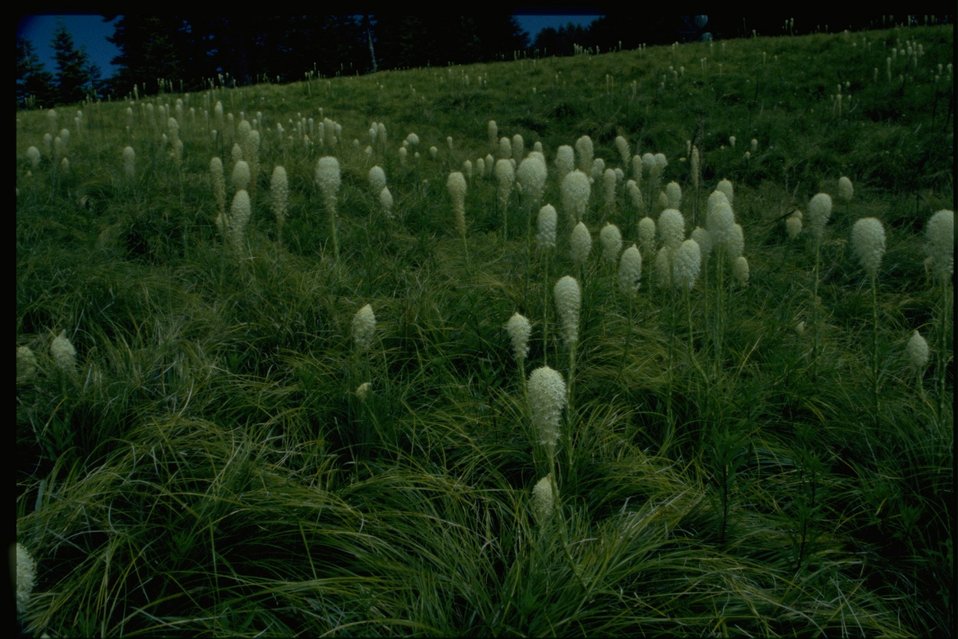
Medium shot, field of Xenophyllum tenax.